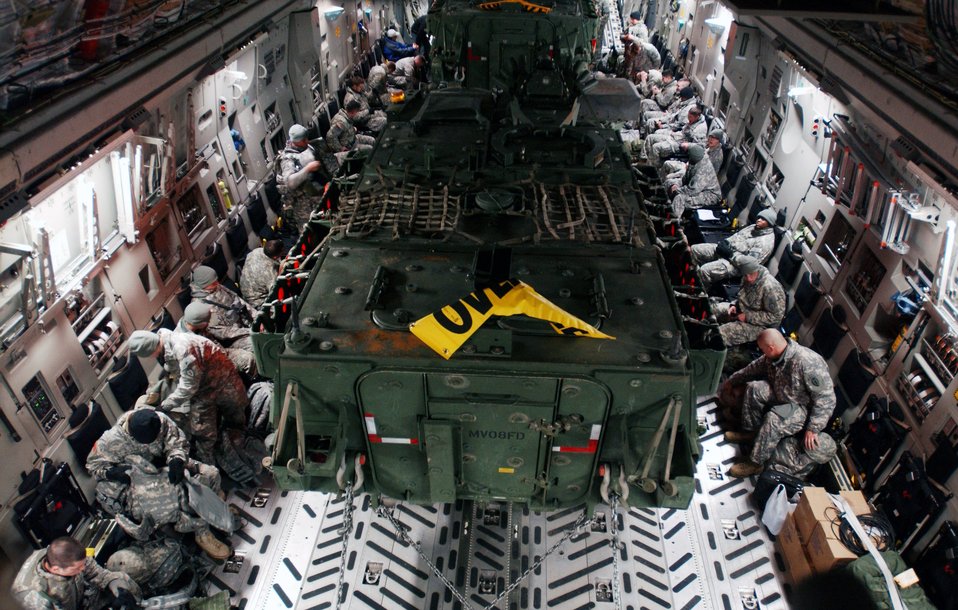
Air Force, Army forces join to support exercise

Soldiers from the Army's First Stryker Brigade at Fort Wainwright, Alaska, prepare for departure aboard a C-17 Globemaster III at Eielson Air Force Base, Alaska, that will transport them and their equipment, including two Stryker vehicles, to South Korea in support of a Foal Eagle exercise. The C-17 and its crew are from the 517th Airlift Squadron at Elmendorf AFB, Alaska.